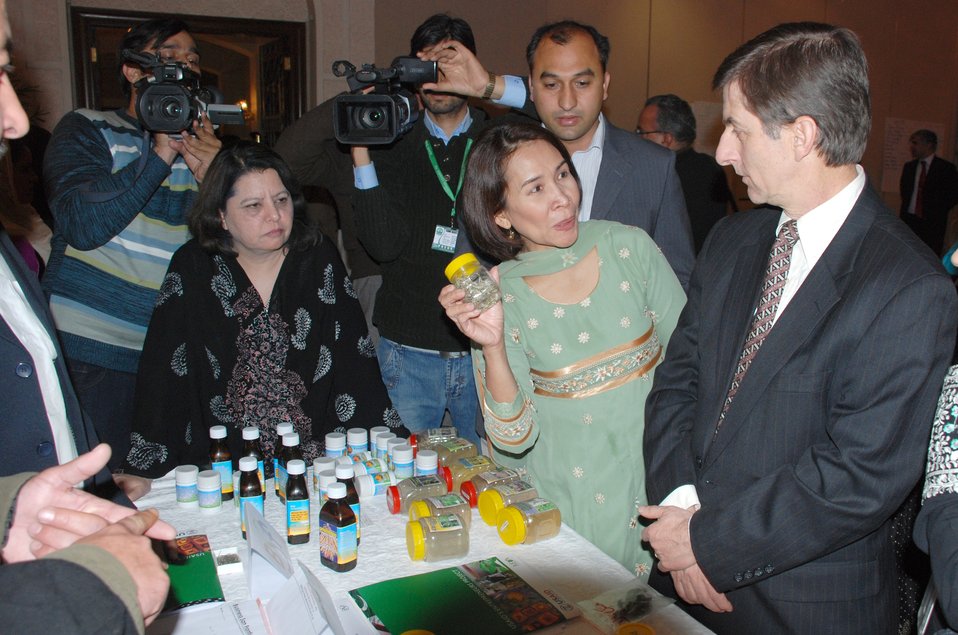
Medicinal Plants and Honey Conference